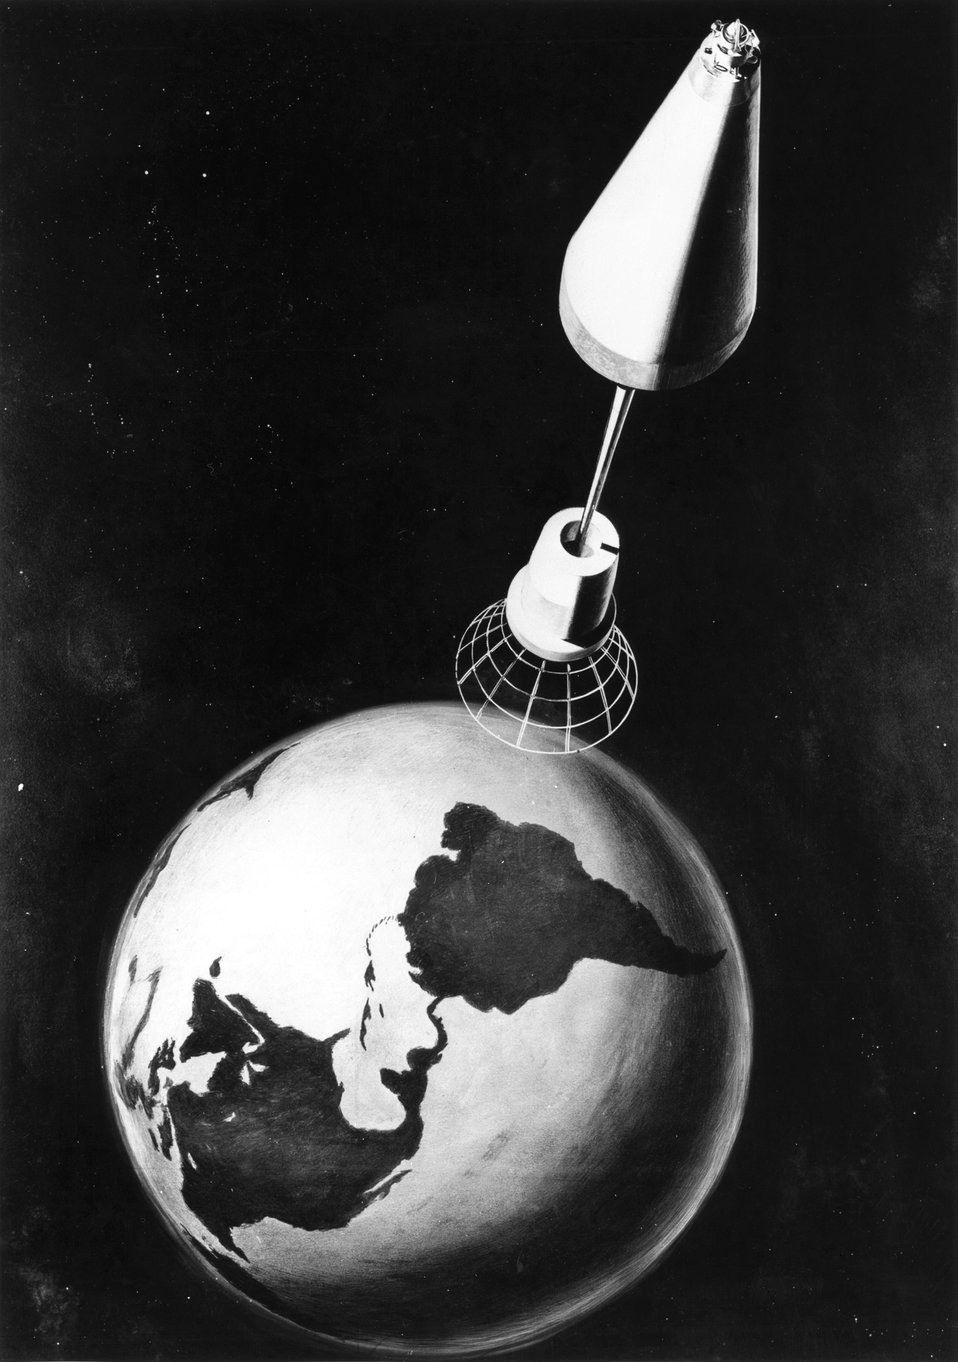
A SNAP power unit could be installed in a 24-hour Earth Satellite for providing commercial world wide television.